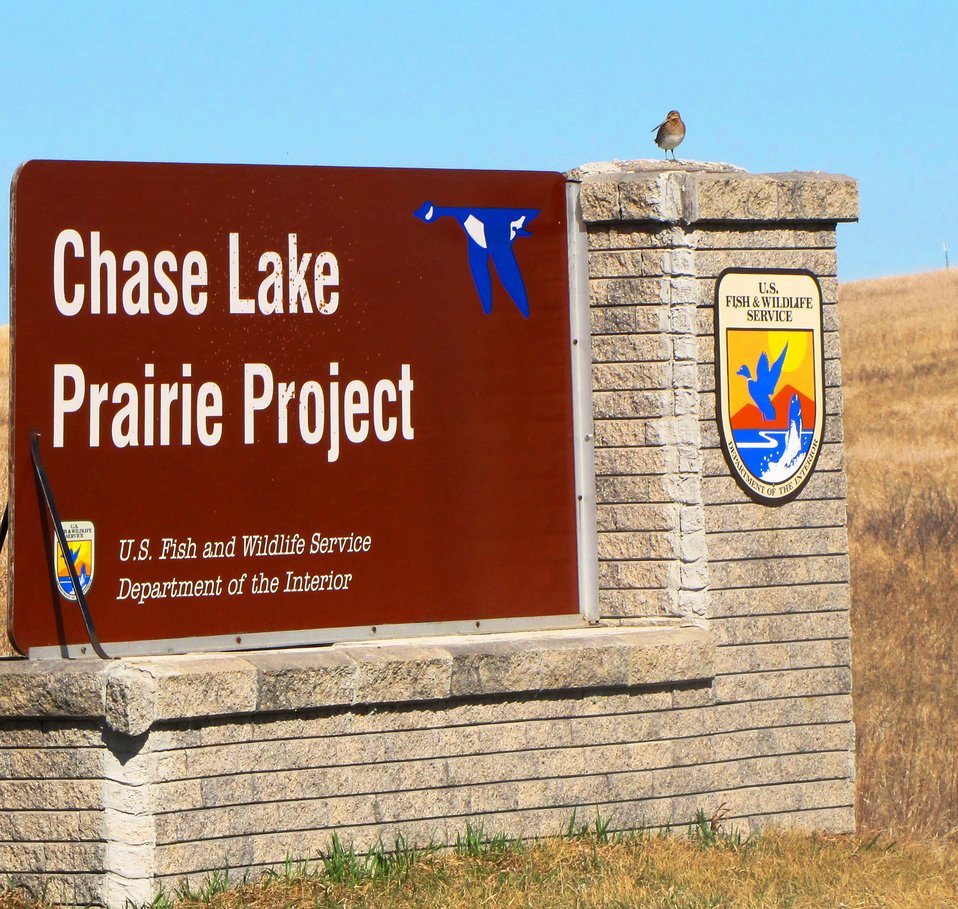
Wilson's Snipe on Chase Lake Prairie Project Sign

This Wilson's Snipe was found in April (2012) sitting on the Chase Lake Prairie Project sign in Woodworth, ND.

Fun fact: These birds make a 'whurring' sound in flight, which is also called winnowing.